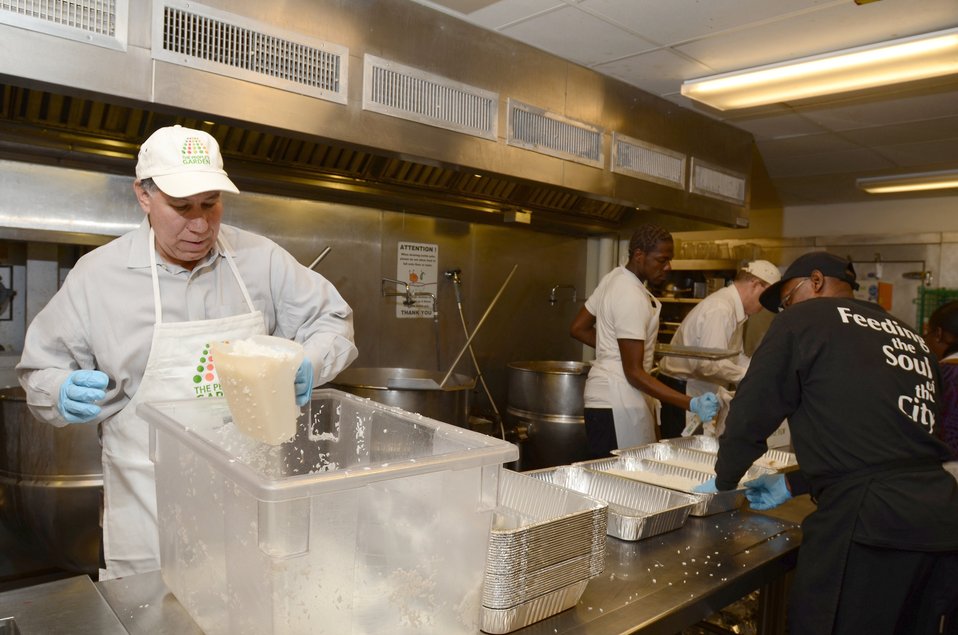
Ed Avalos, Under Secretary for Marketing and Regulatory Programs helps prepare the evening meal at the D.C. Central Kitchen during USDA’s National Service Day on January 12, 2012. NSD honors Dr. Martin Luther Kings’s contributions to the Civil Rights Movement. The D.C. Central Kitchen turns leftover food into millions of meals for thousands of at-risk individuals while offering nationally recognized culinary job training to once homeless and hungry adults.